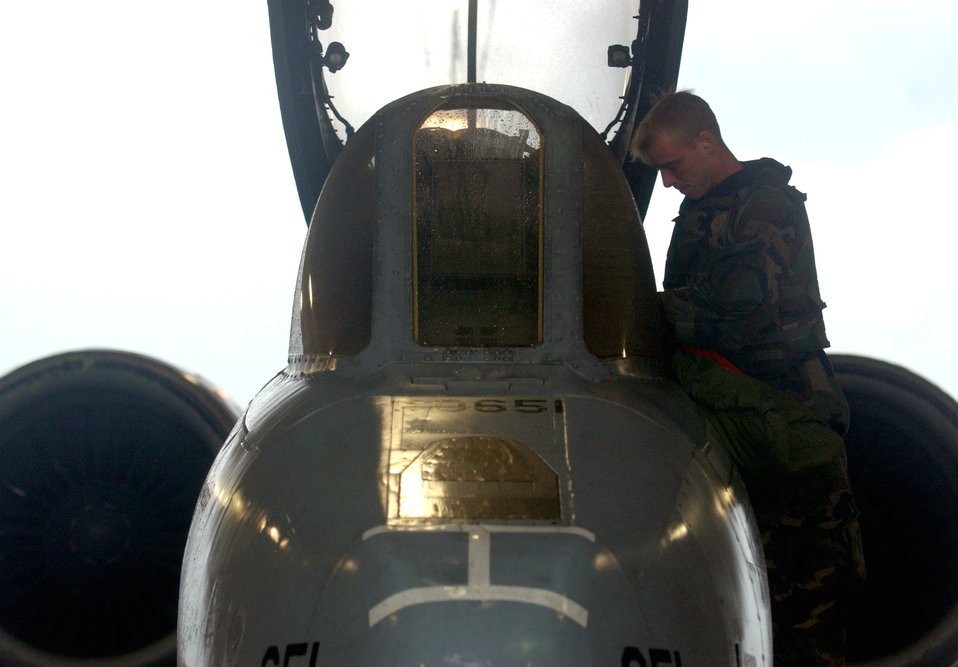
Beverly Bulldog at Osan

An A-10 Thunderbolt II crewchief inspects an aircraft during Exercise Beverly Bulldog at Osan Air Base, South Korea, on July 28.